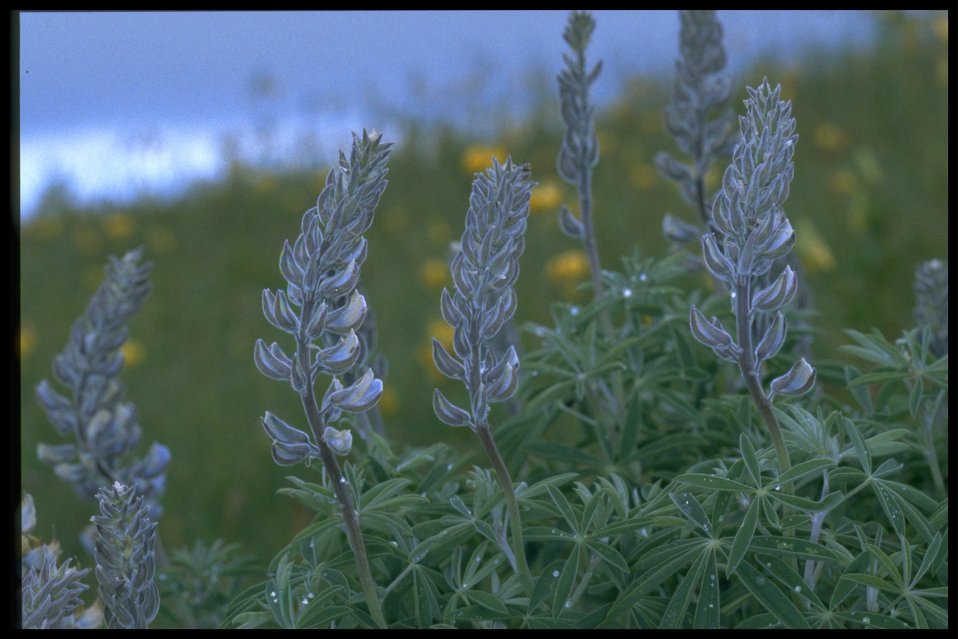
Medium shot of lupine (genus Lupinus).